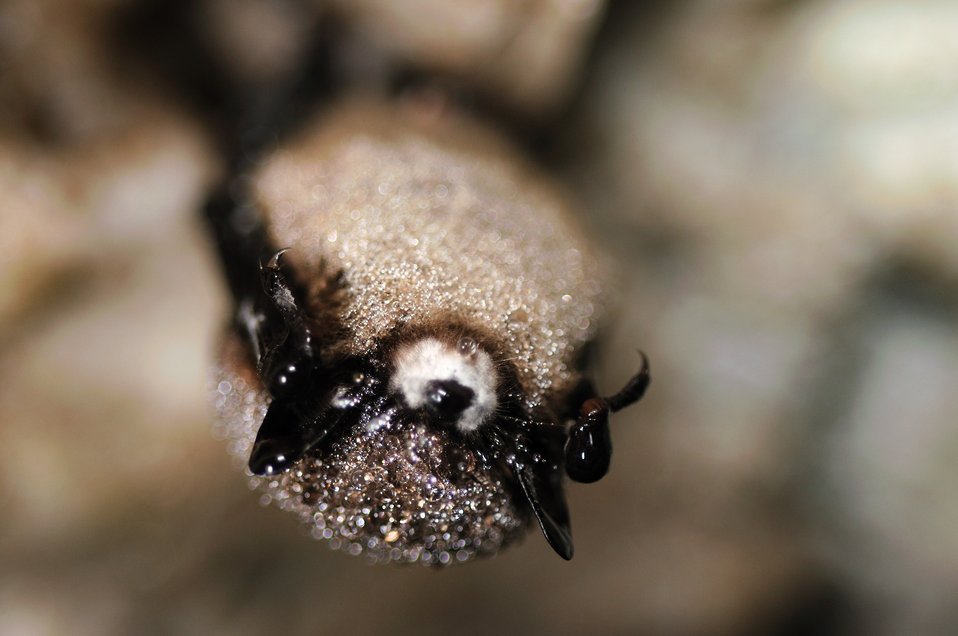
little brown bat with white-nose syndrome